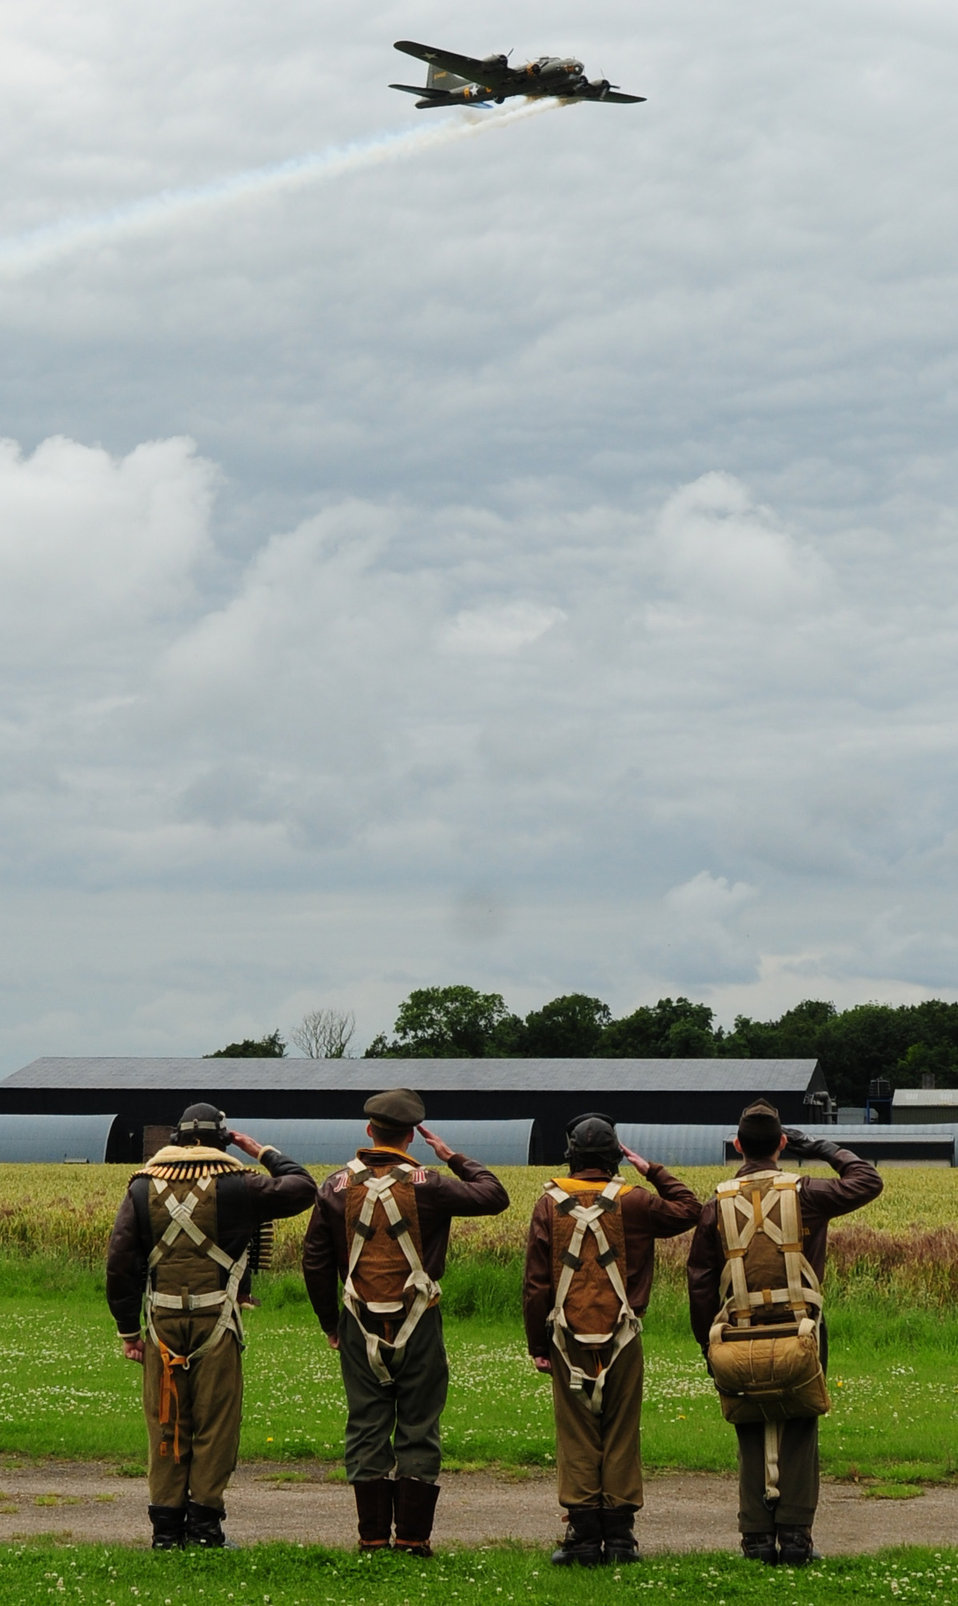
UK's 'Friendly Invasion' 70 years on

Airmen from Royal Air Force Lakenheath, England, salute the last active B-17 Flying Fortress in Europe as it flies over the former Knettishall Airfield on July 14, 2012. The fly-over was part of the 388th Bombardment Group memorial re-dedication at Coney Weston, England.